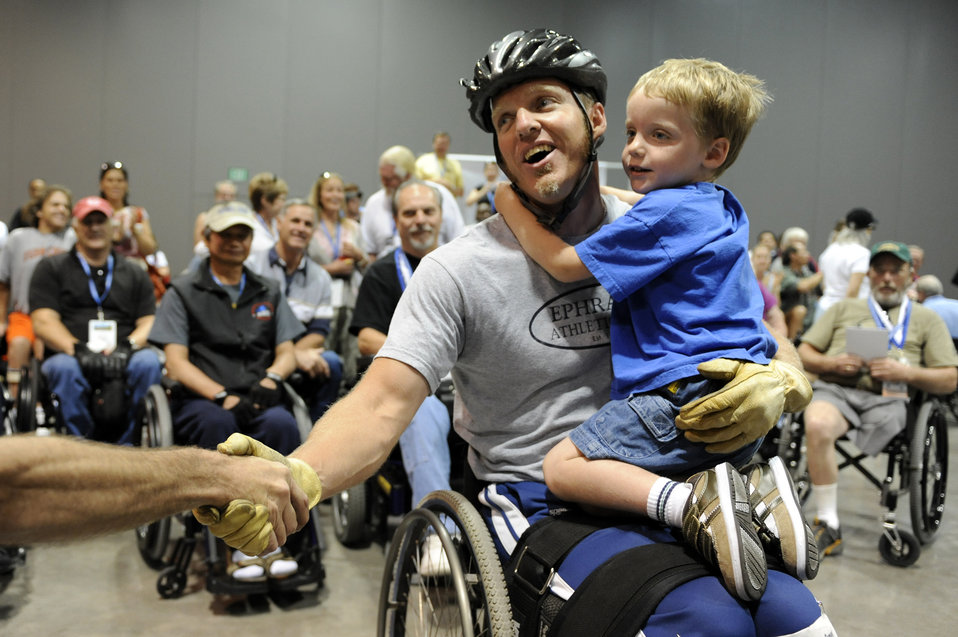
Volunteers ensure success at Veterans Wheelchair Games

Sean Halsted shakes hands with a fan as he holds his son, Ethan, 5, after completing the slalom super G competition during the 29th National Veterans Wheelchair Games July 16 in Spokane, Wash. Mr. Halsted is an Air Force veteran and resides in Rathdrum, Idaho.